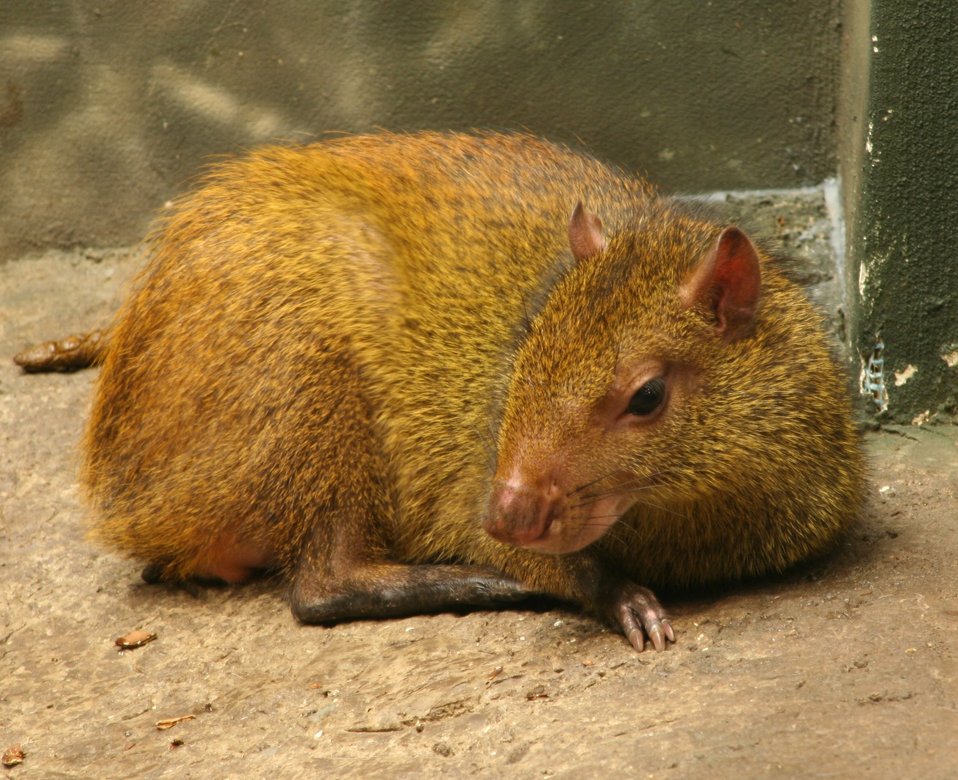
Brazilian Agouti (Dasyprocta leporina) at the Buffalo Zoo